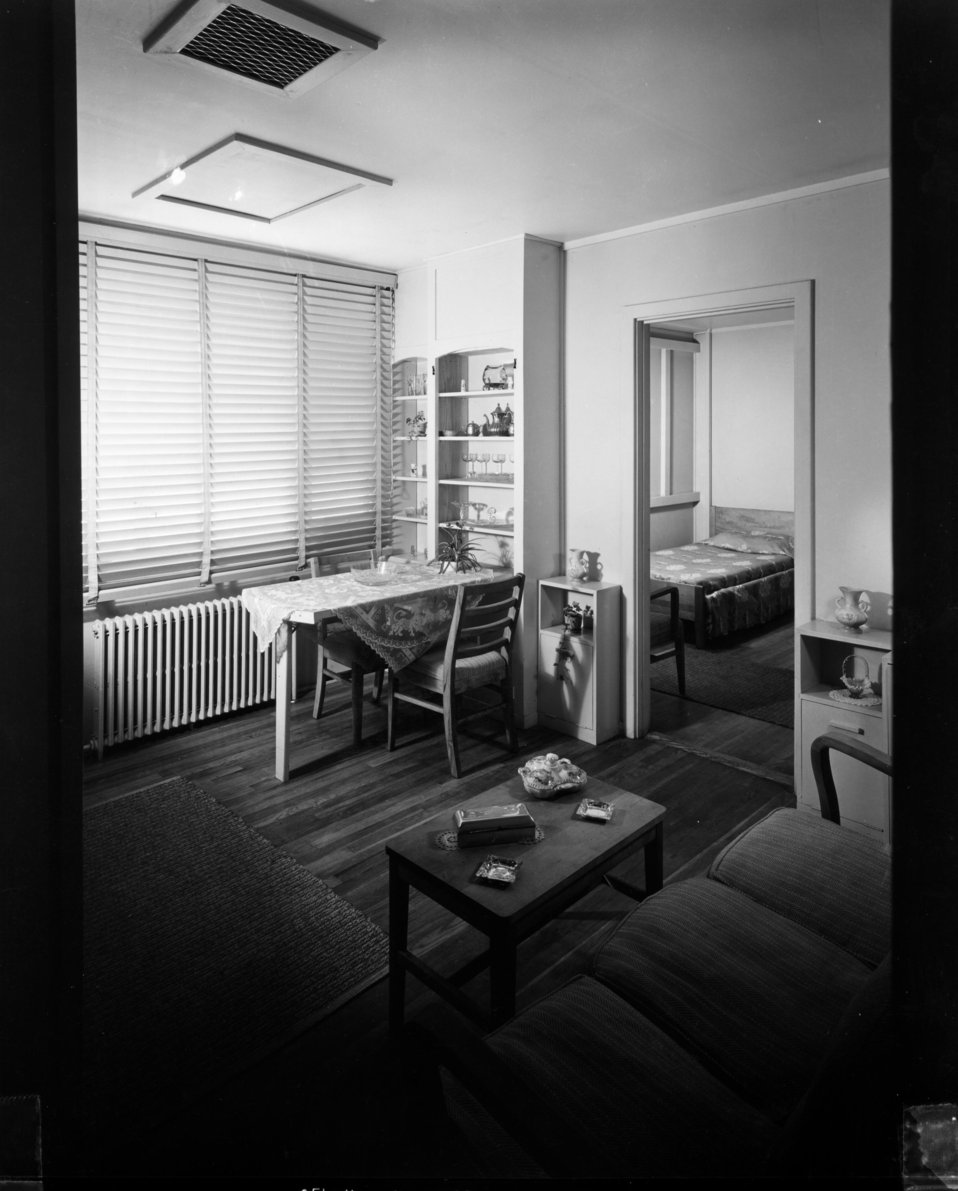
Housing at Oak Ridge